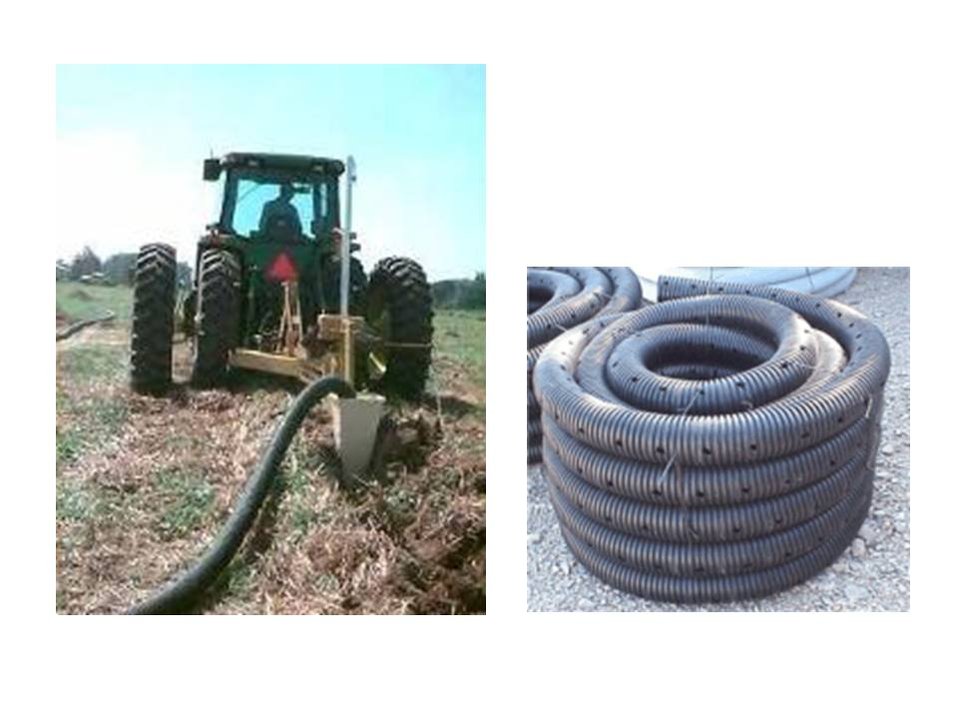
Plastic Drainage Install

Installing plastic drainage tile is now a farm-based enterprise that any farmer can do.